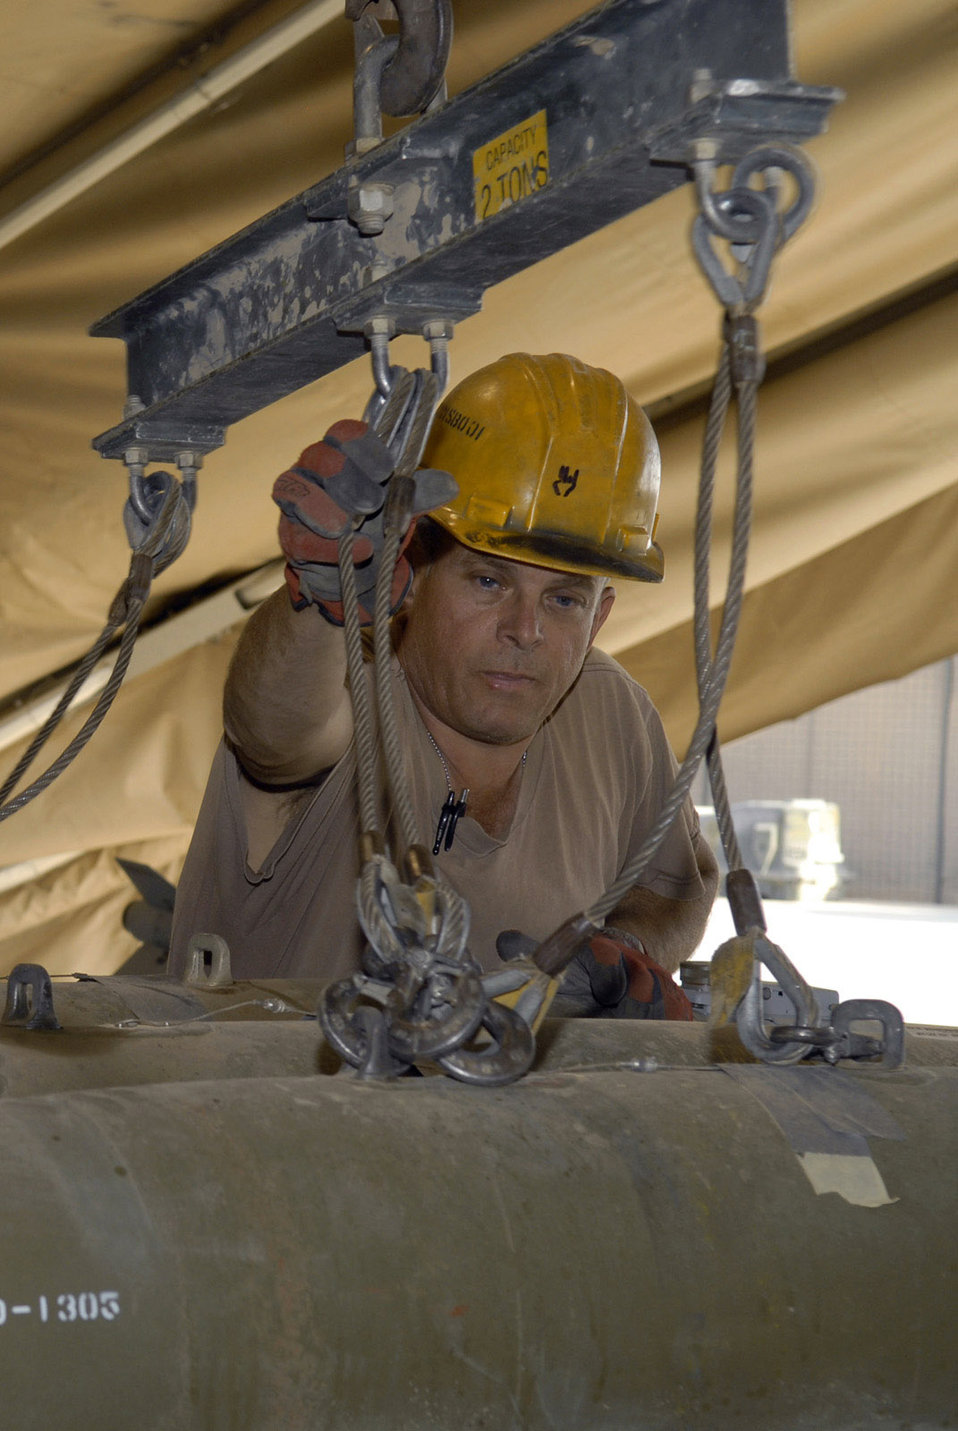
Bombs away

Tech. Sgt. Edmund Foerster uses a munitions assembly conveyor to load bombs onto a transport trailer Oct. 15 at Balad Air Base, Iraq. The conveyor allows personnel to move multiple munitions at one time. Sergeant Foerster is assigned to the 332nd Expeditionary Maintenance Squadron.